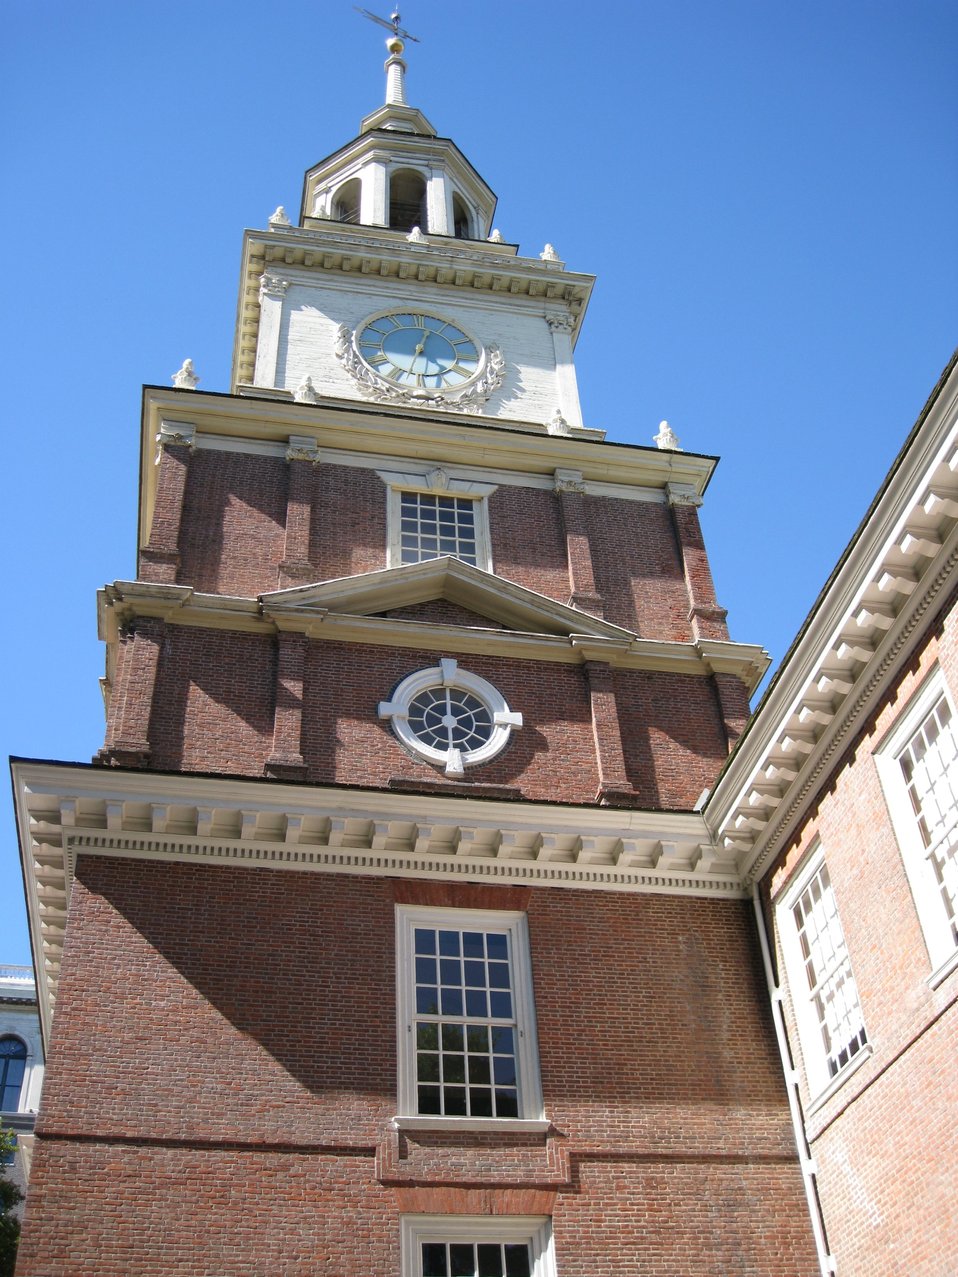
The clocktower at Independence Hall